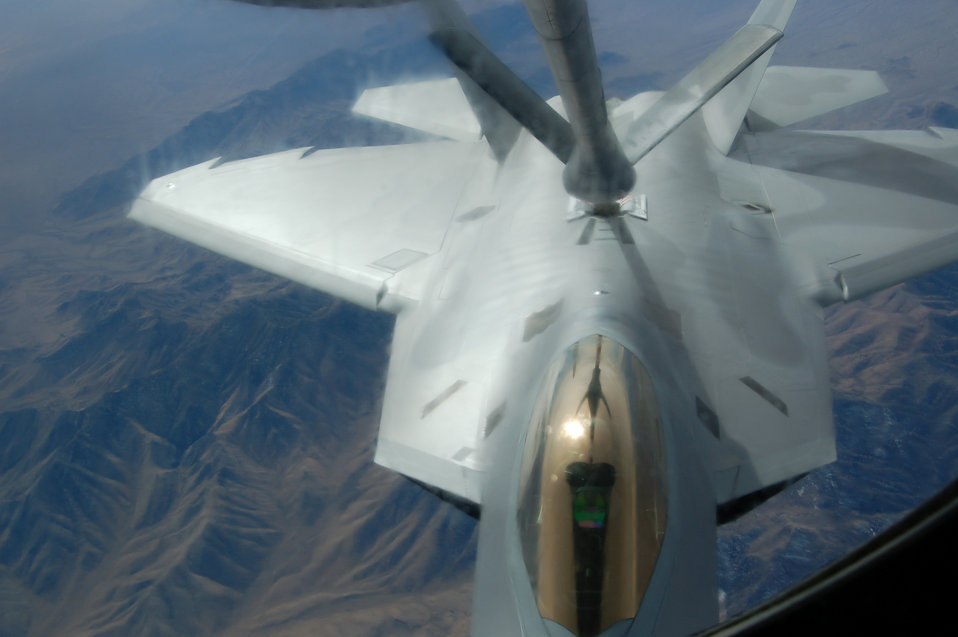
Raptors invade Nevada

An F-22 Raptor from the 1st Fighter Wing at Langley Air Force Base, Va., tops off from a KC-135 Stratotanker Feb. 7 during the Red Flag Exercise at Nellis AFB, Nev. Two KC-135s from the 319th Air Refueling Wing at Grand Forks Air Force Base, N.D., make up the lead tanker unit during the exercise.